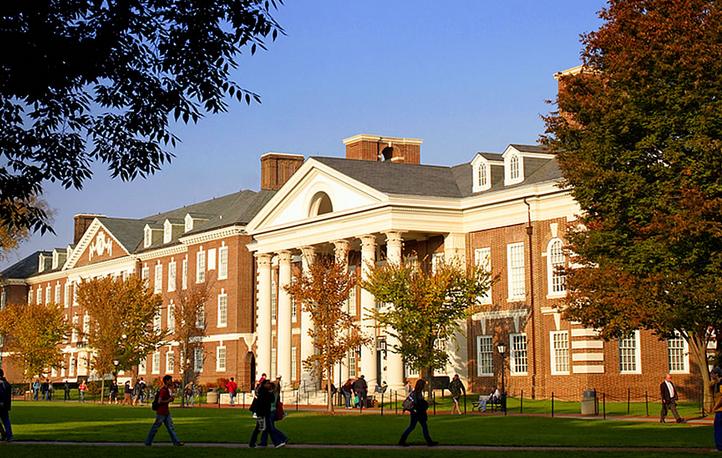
Image from Univ of Delaware's Campus